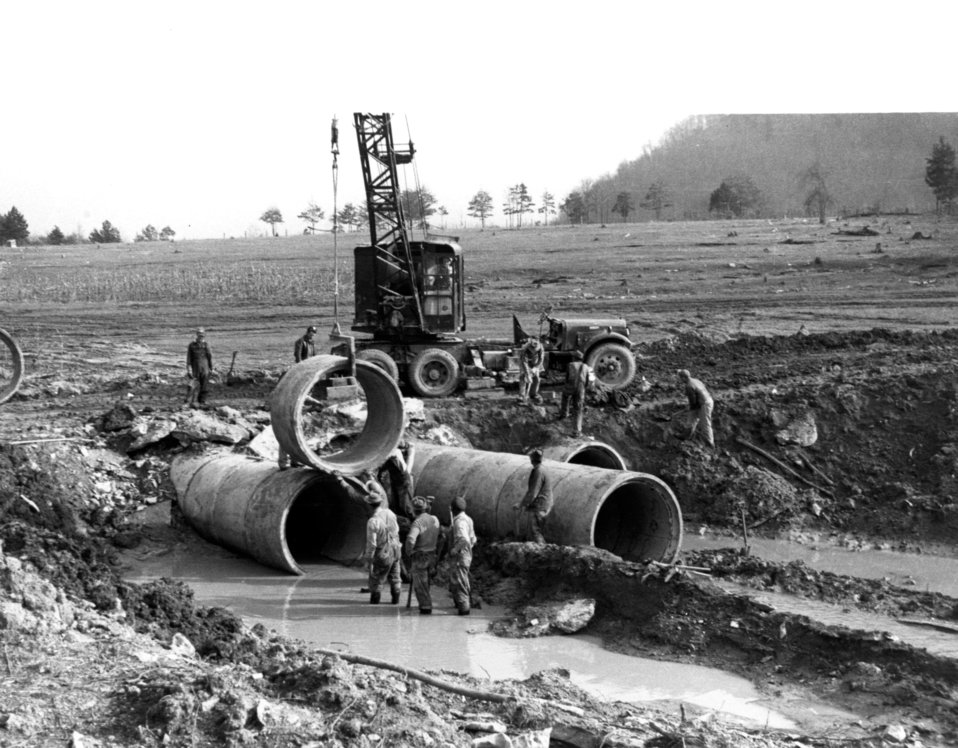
Construction activity at Oak Ridge